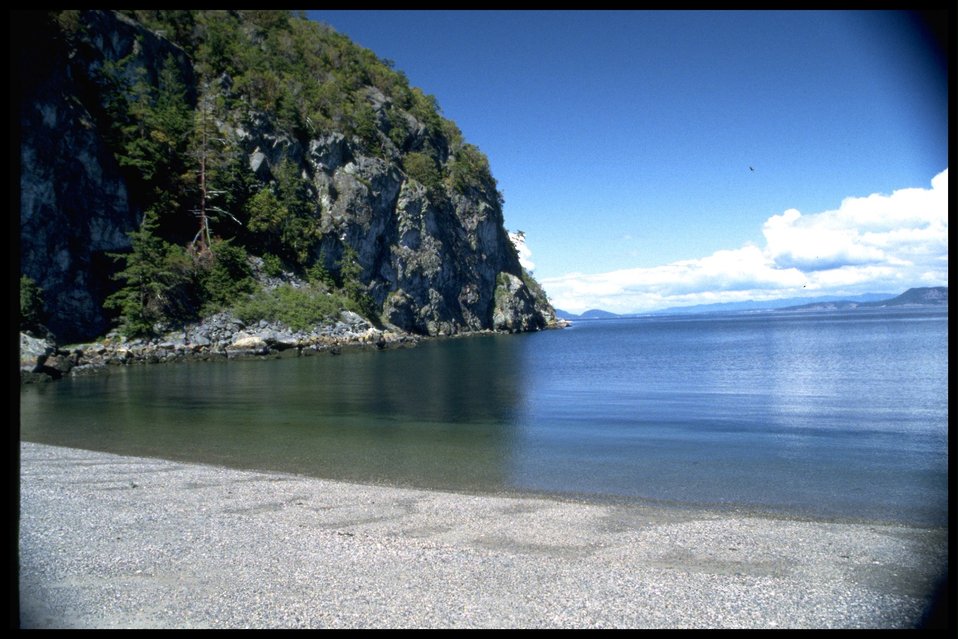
Beach at Watmough Bay.